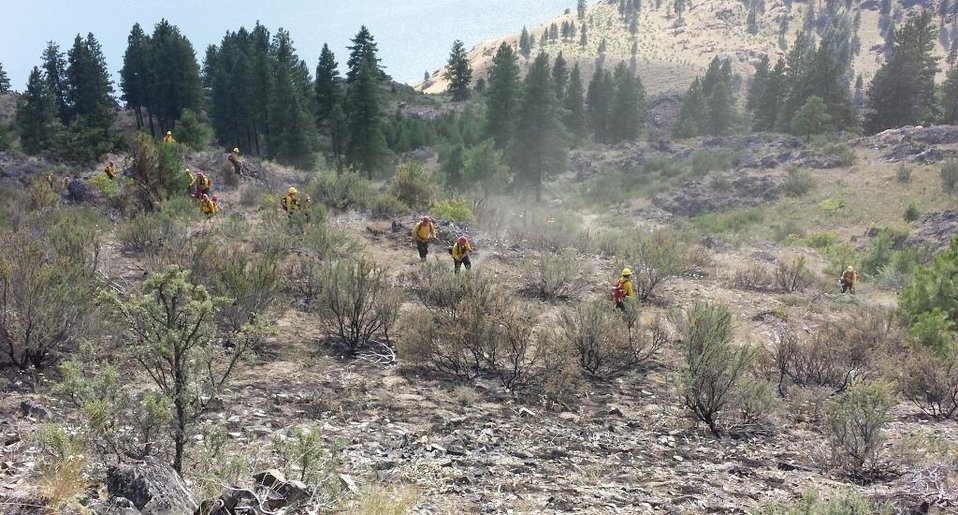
Fire crews work to cool and extinguish the 25 Mile fire. The 25 Mile Fire near Manson, WA began on Jul. 04, 2013 is under investigation and has consumed approximately 2,098 acres and is approximately 70% contained. U.S. Forest Service photo by Washington Interagency Incident Management Team #4.